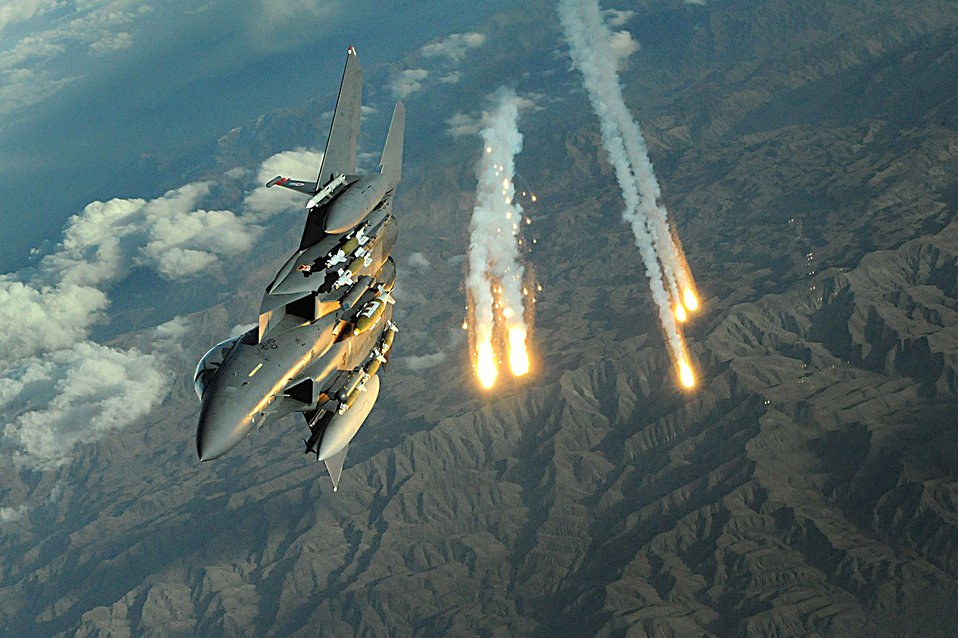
F-15E Strike Eagle

An F-15E Strike Eagle from Bagram Air Base deploys flares over Afghanistan Nov. 12, 2008. The F-15E's primary role in Afghanistan is providing close-air support for ground troops.